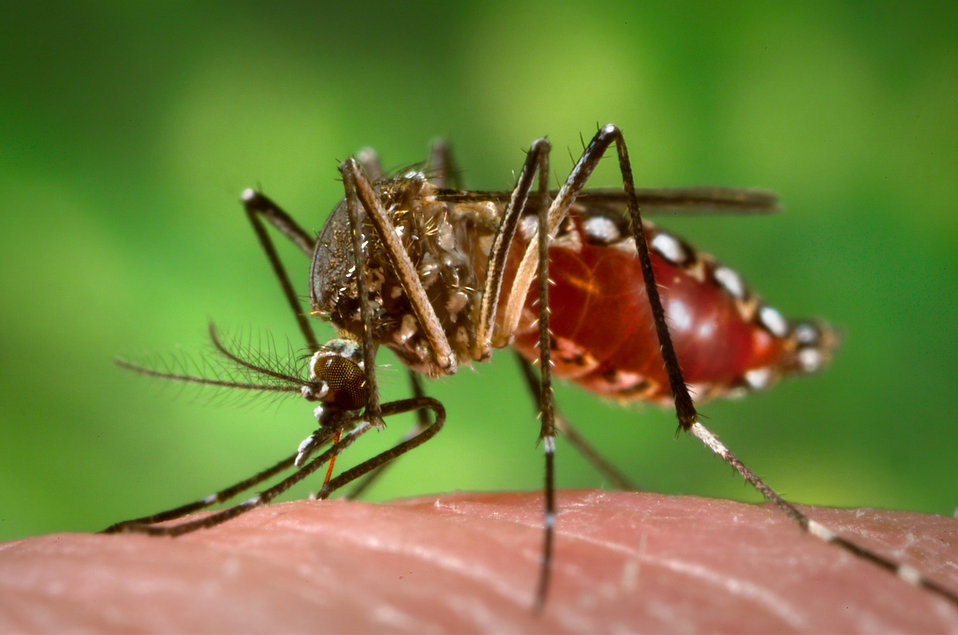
This 2006 photograph depicted a female Aedes aegypti mosquito as she was in the process of obtaining a "blood meal", which normally is from an unsuspecting host, but in this case, the CDC's biomedical photographer, James Gathany, had volunteered his own hand in order to entice the insect to alight, and feed. Note that having penetrated the skin surface with its sharply-pointed fascicle, the feeding mosquito was collecting its blood meal in its distended abdomen, evidenced by the red coloration visible through the stretching, translucent exoskeletal abdominal exterior. See PHIL # #8924, for this mosquito's appearance before the ingestion of its blood meal. If you look carefully, you can also see that the labium, which is the soft tissue sheath that envelopes the sharply-pointed fascicle, had slid up the fascicle, and took on a "kinked" configuration, pointing posteriorly.